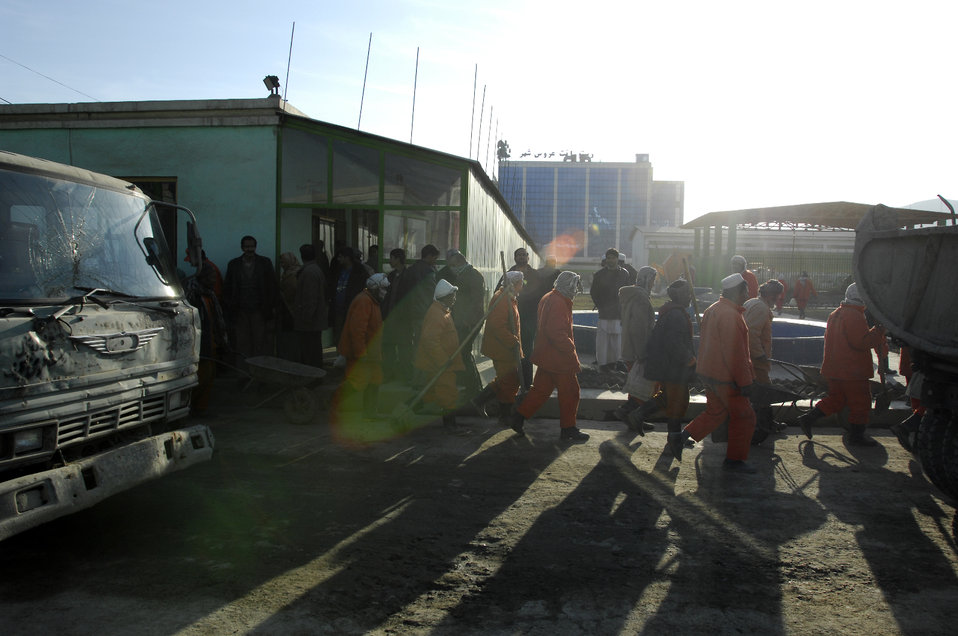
Care62